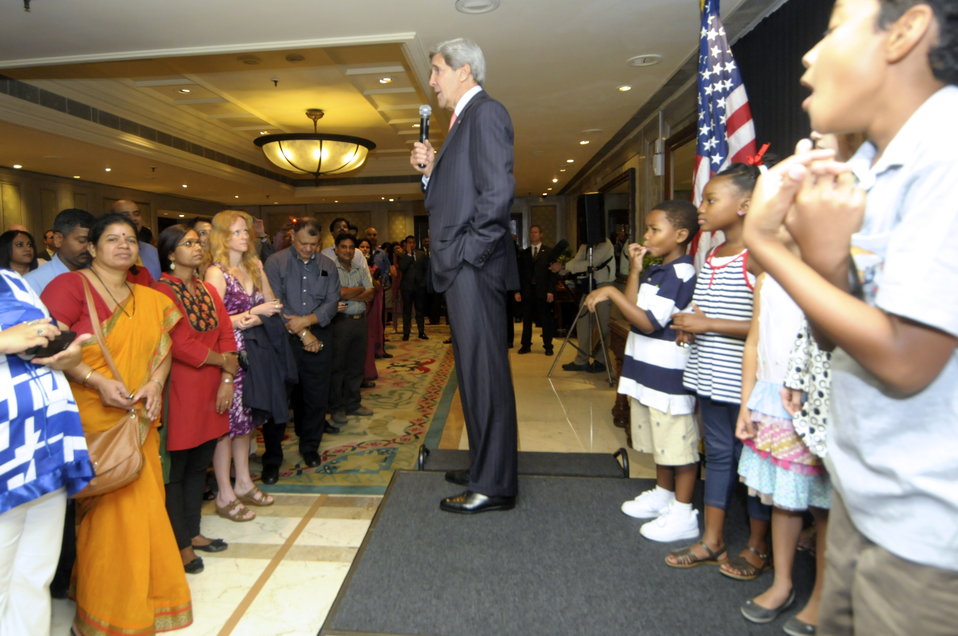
Secretary Kerry Greets Embassy New Delhi Staff

U.S. Secretary of State John Kerry addresses employees at the U.S. Embassy in New Delhi, India, during a staff meet-and-greet on June 25, 2013.